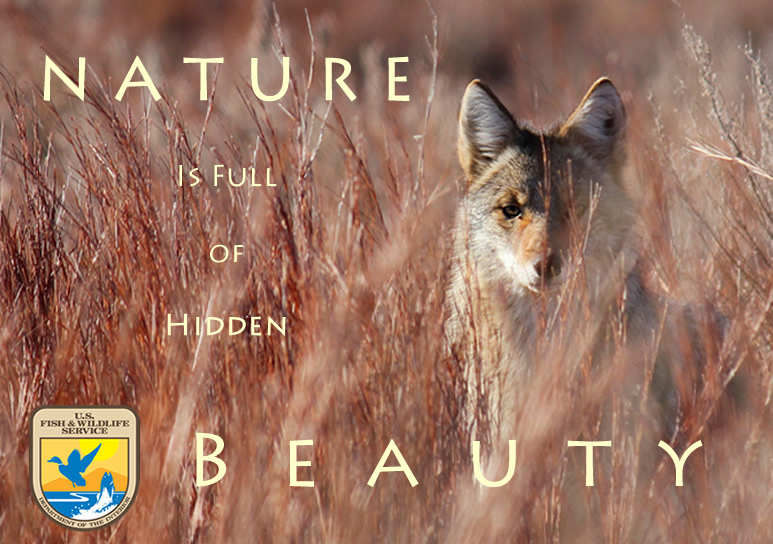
Hidden Beauty

Coyote in little bluestem.Photo taken on a private ranch in the Red Hills of Kansas